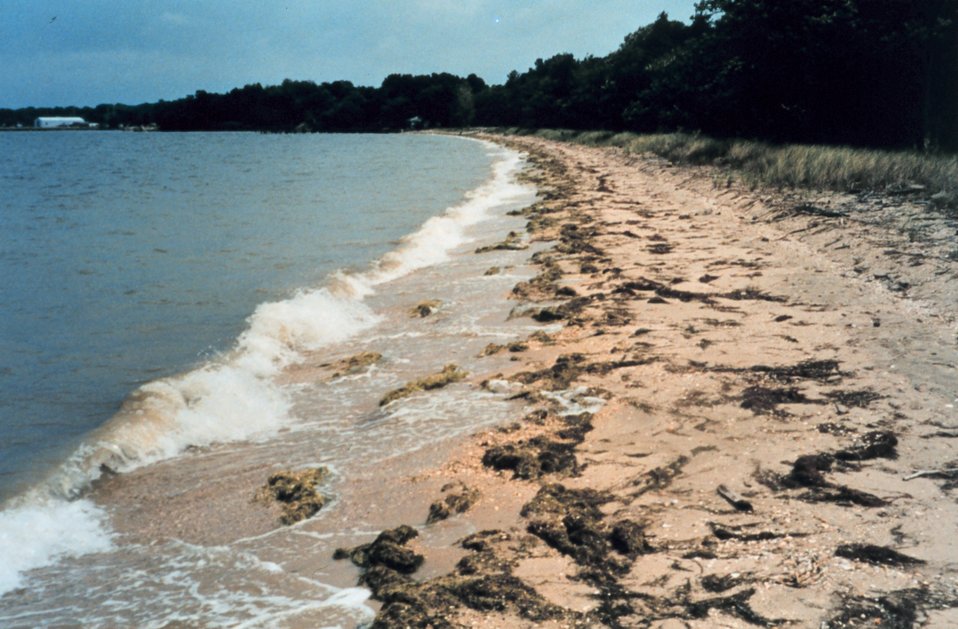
Horned pondweed - Zannichellia palustrus - growth usually peaks in June and begins covering the beaches. Submerged aquatic vegetation (SAV) provides food and habitat for a wide variety of biota, but has been in serious decline for the last several decades.